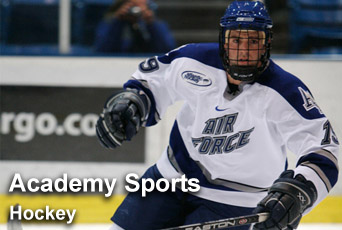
Academy sports: Hockey

For up-to-date scores on all U.S. Air Force Academy sports, visit their Web site at www.goairforcefalcons.com.